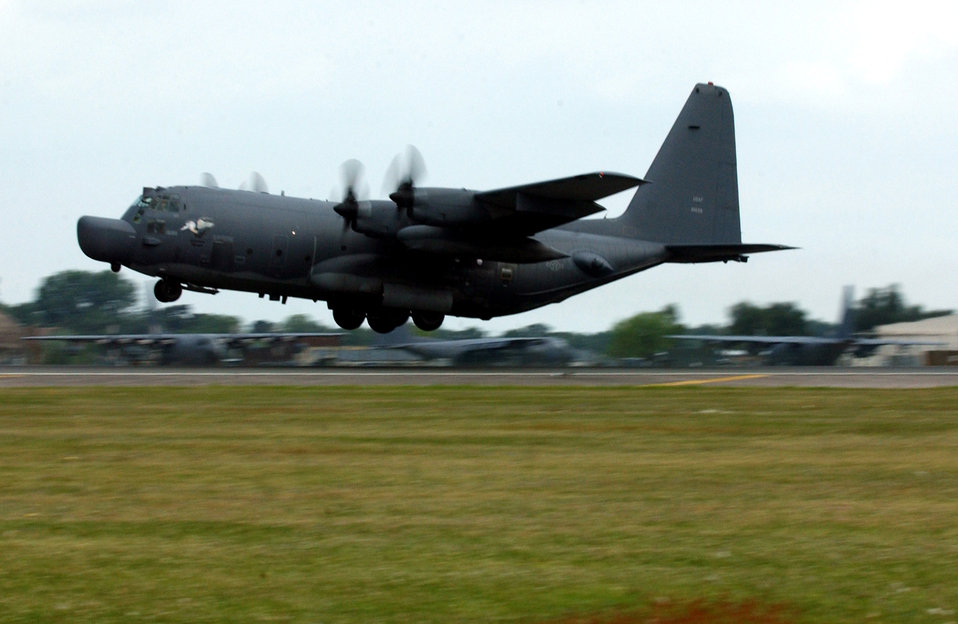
Talon landing

ROYAL AIR FORCE LAKENHEATH, England -- An MC-130H Combat Talon II takes off from the flightline here May 20. The MC-130H is assigned to the 352nd Special Operations Group at Royal Air Force Mildenhall, England.